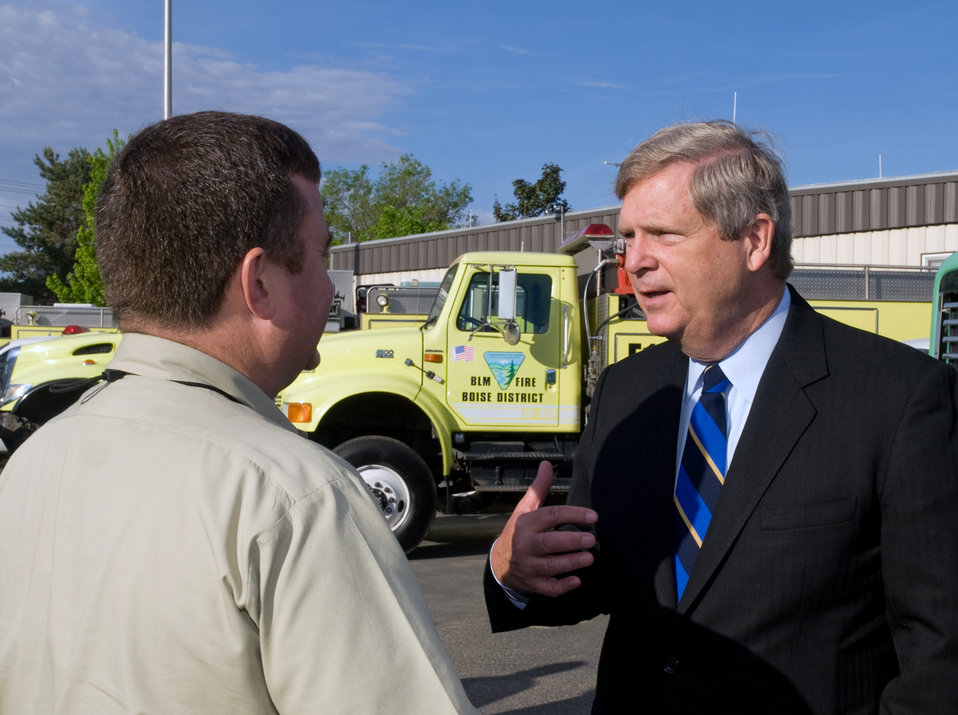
Agriculture Secretary Tom Vilsack speaks to U.S. Forest Service firefighter at the National Interagency Fire Center (NIFC) in Boise, ID on Monday, May 13, 2013. Agriculture Secretary Vilsack and Interior Secretary Jewell provided an outlook for the upcoming fire season and outlined the federal government’s efforts to ensure collaboration in protecting Americans from wildfire.